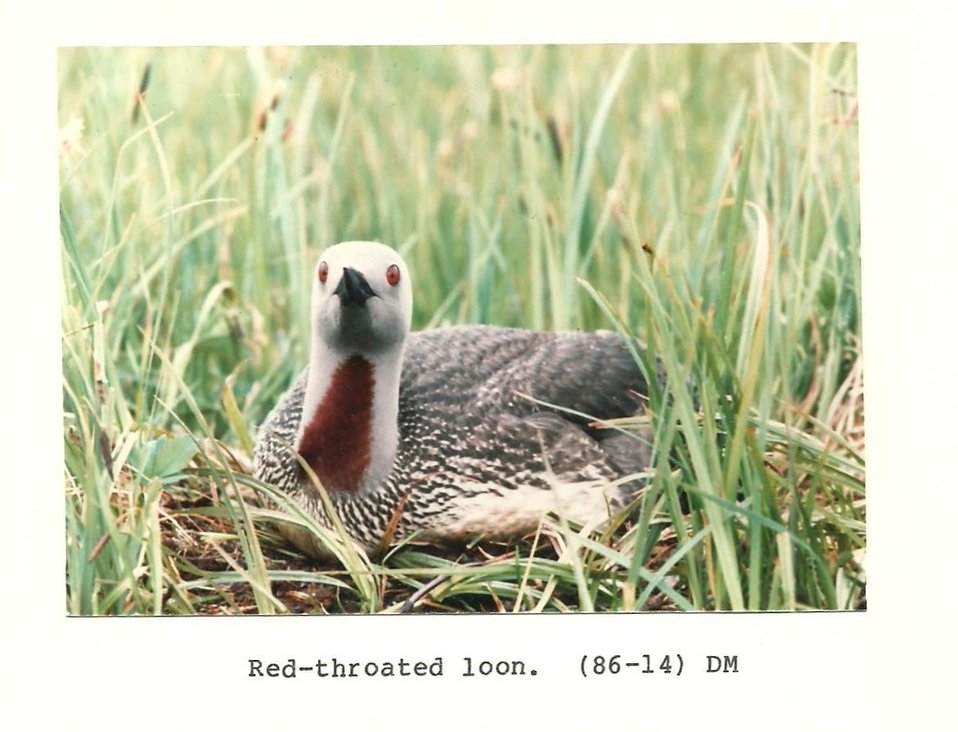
(1986) Red-Throated Loon

Credit: USFWS

Source and Contact: Kodiak National Wildlife Refuge